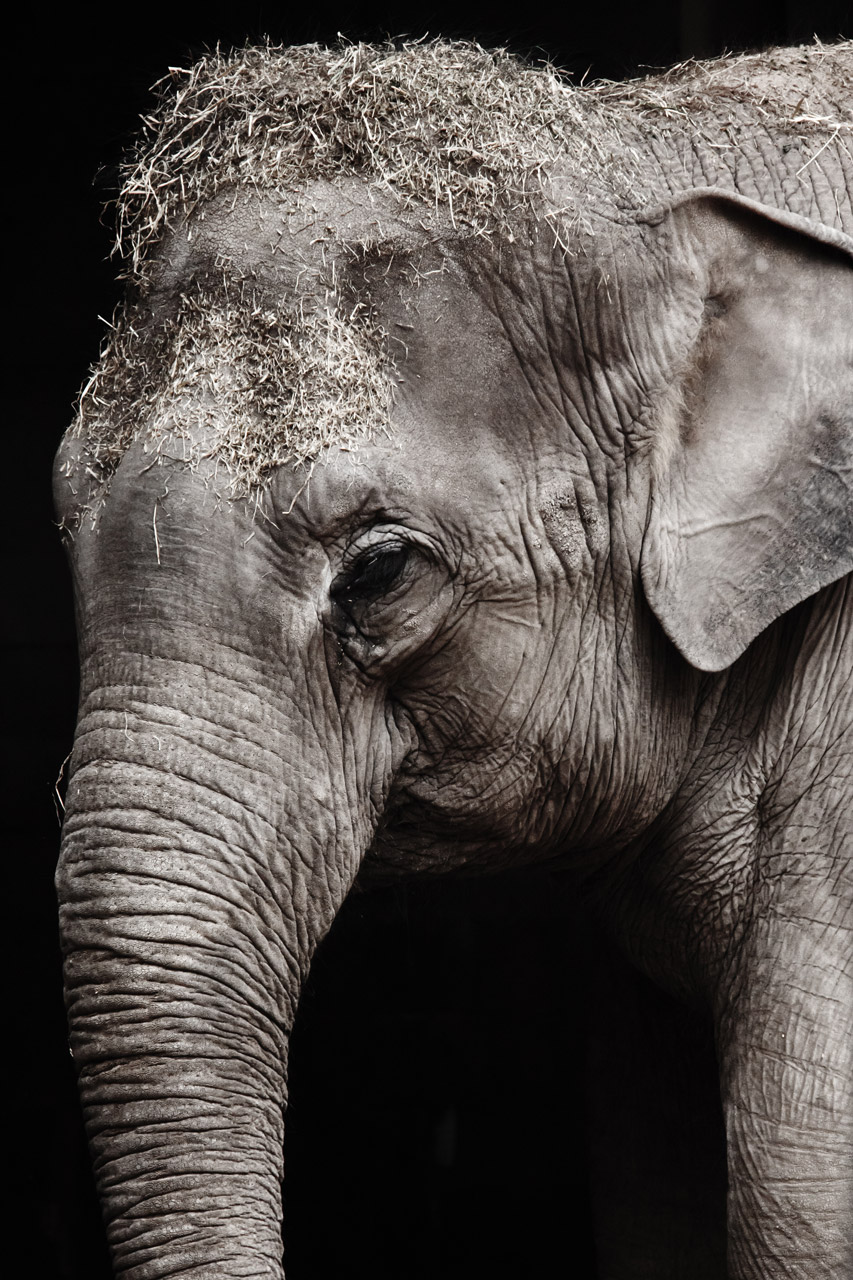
Elephant portrait

Black and white photo of an elephant.